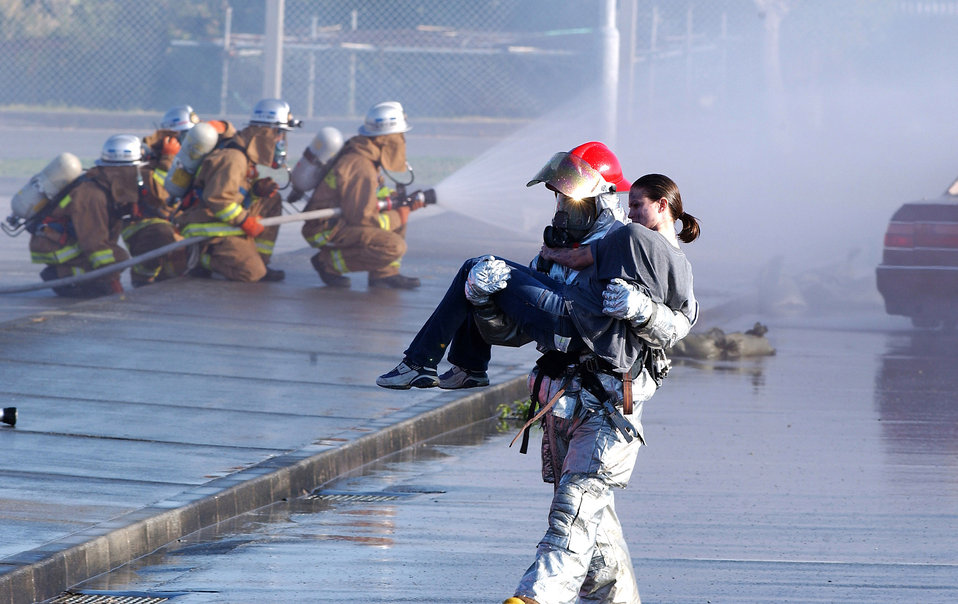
Bilateral exercise at Kadena

An 18th Civil Engineer Squadron firefighter carrys a simulated victim off site while Okinawan firefighters spray down a simulated aircraft accident at the first bilateral off-base exercise Feb. 28 between Kadena Air Base emergency responders and local Okinawan police, fire and medical teams. The exercise was conducted to enhance cooperation between base and off-base agencies in the event of an aircraft accident.